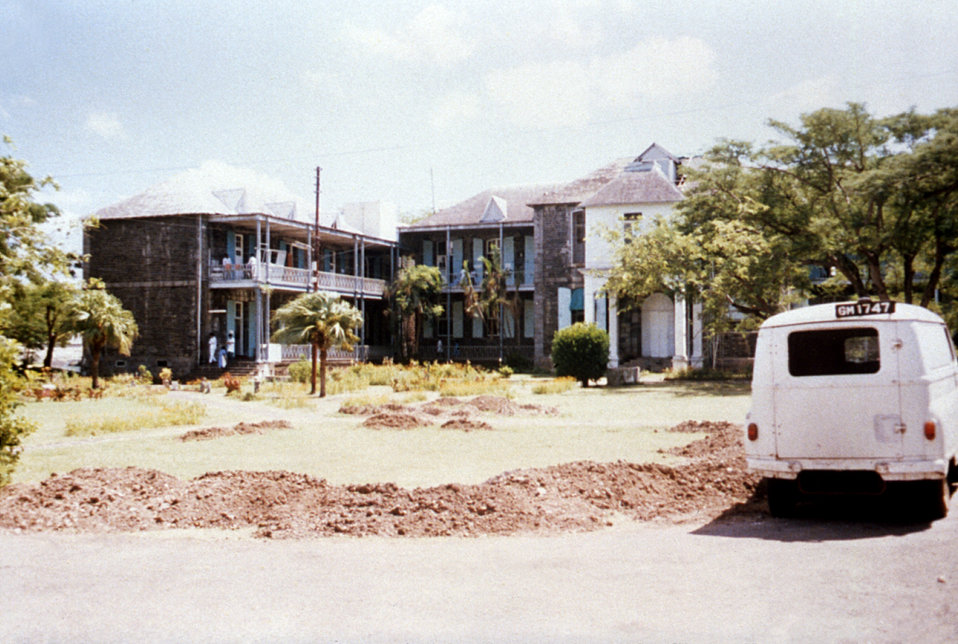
This 1980 photograph depicts the men's ward and surgical building of the Port Louis, Mauritius Civil Hospital.